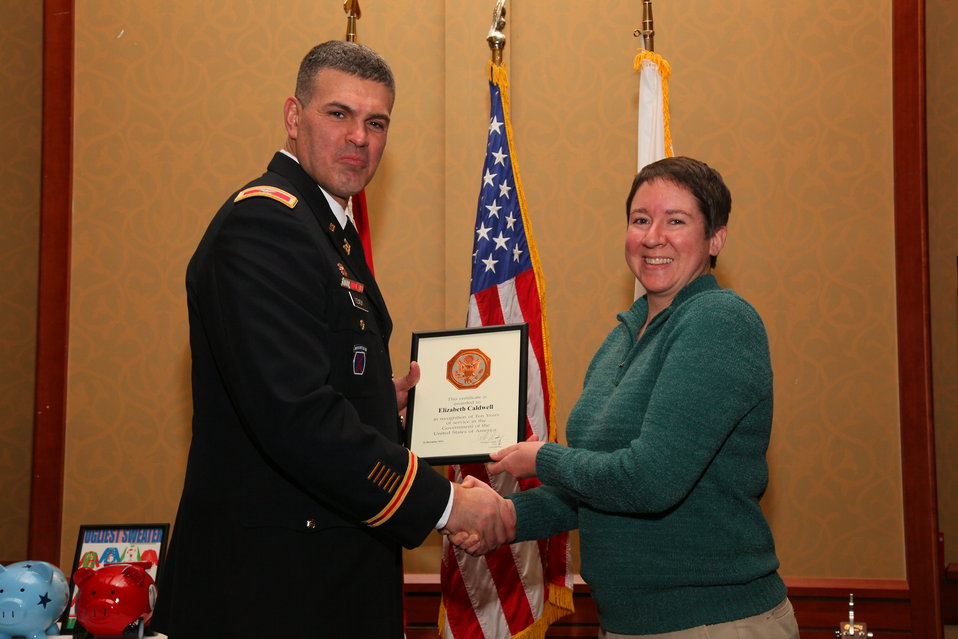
Sacramento District Holiday Party 2011